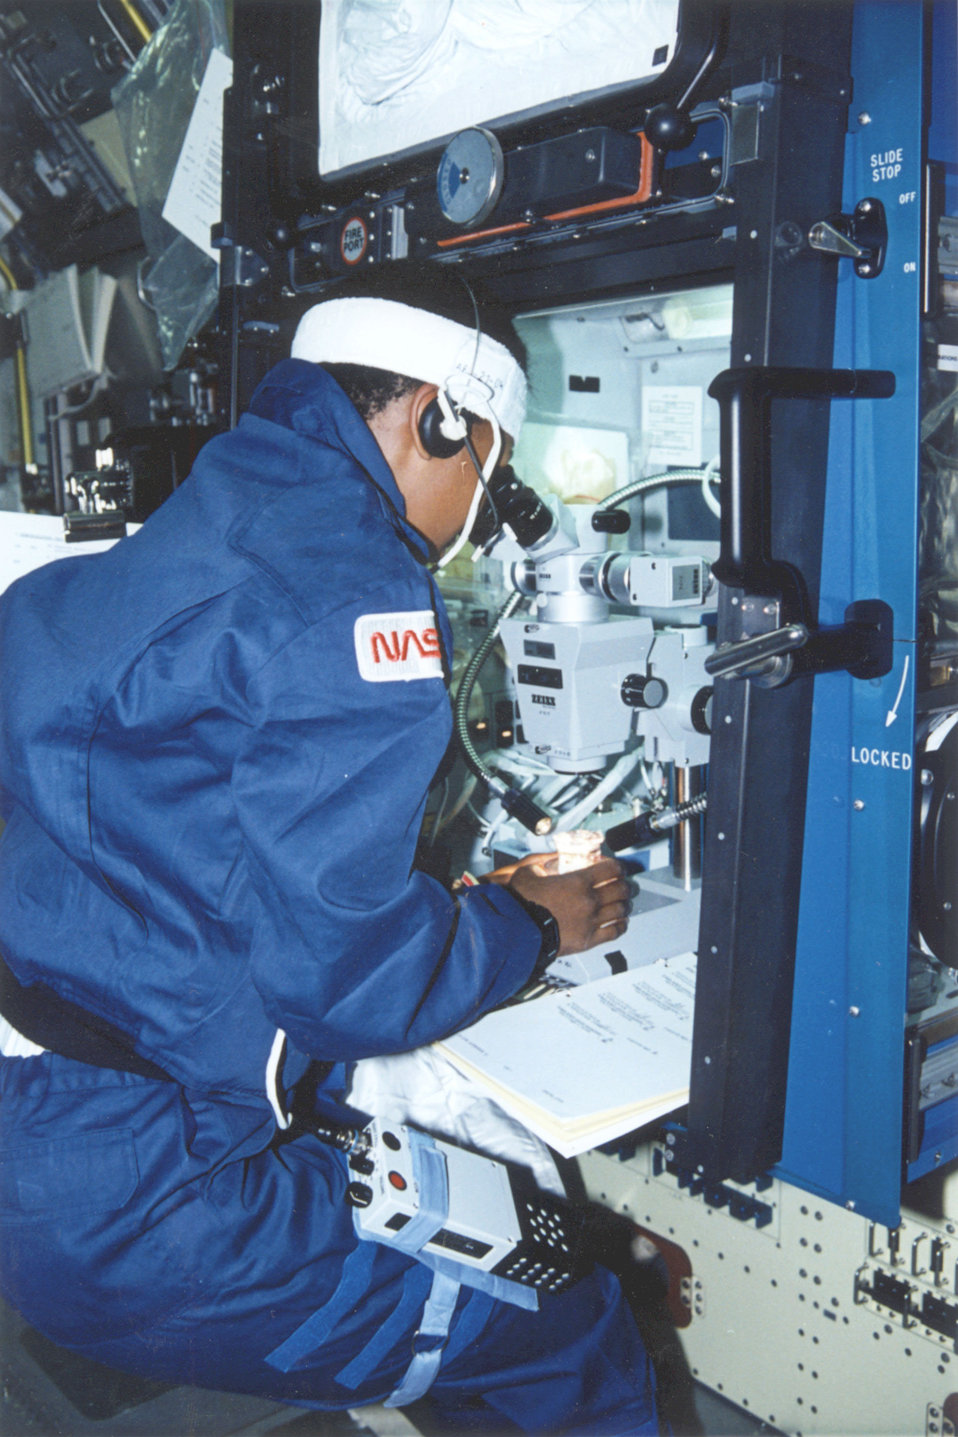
Dr. Mae Jemison's curiosity of science as a young girl led to her becoming the first African-American woman in space